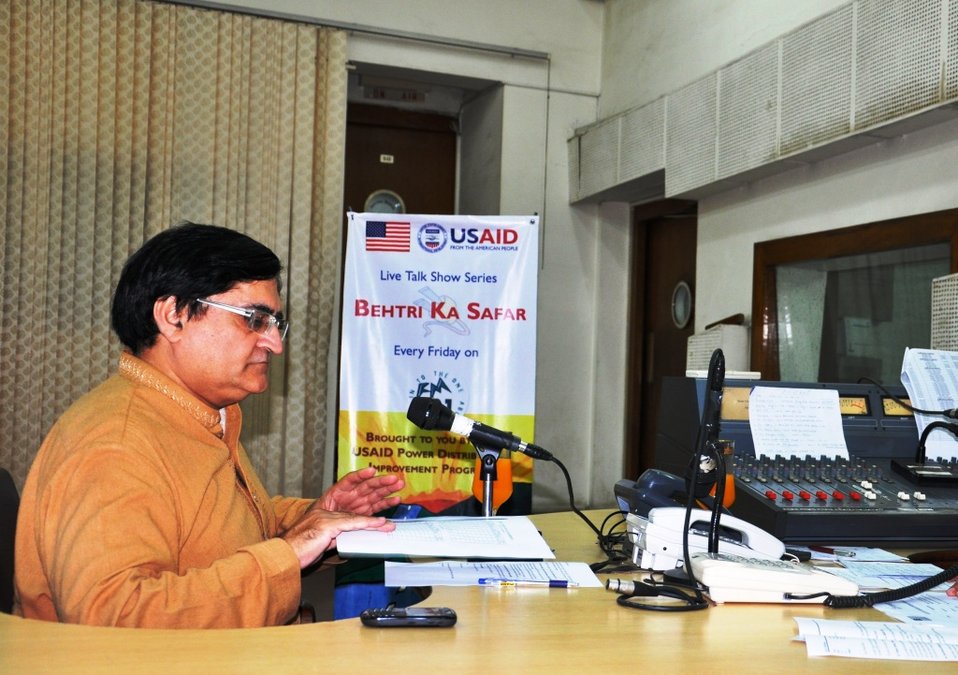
Dr. Tehseen explaining Quick Impact Safety Training Program in Ep # 6

In episode 6 of Behtri Ka Safar Power Distribution Program's Sr. HR Manager Dr. Tehseen Chohan introduced the Impact Safety Training Program for the DISCO linemen. The program has been initiated to cater with the increasing trend of electricity related accidents and aims at addressing the issue by creating a safe working environment for the employees through awareness of safety procedures.